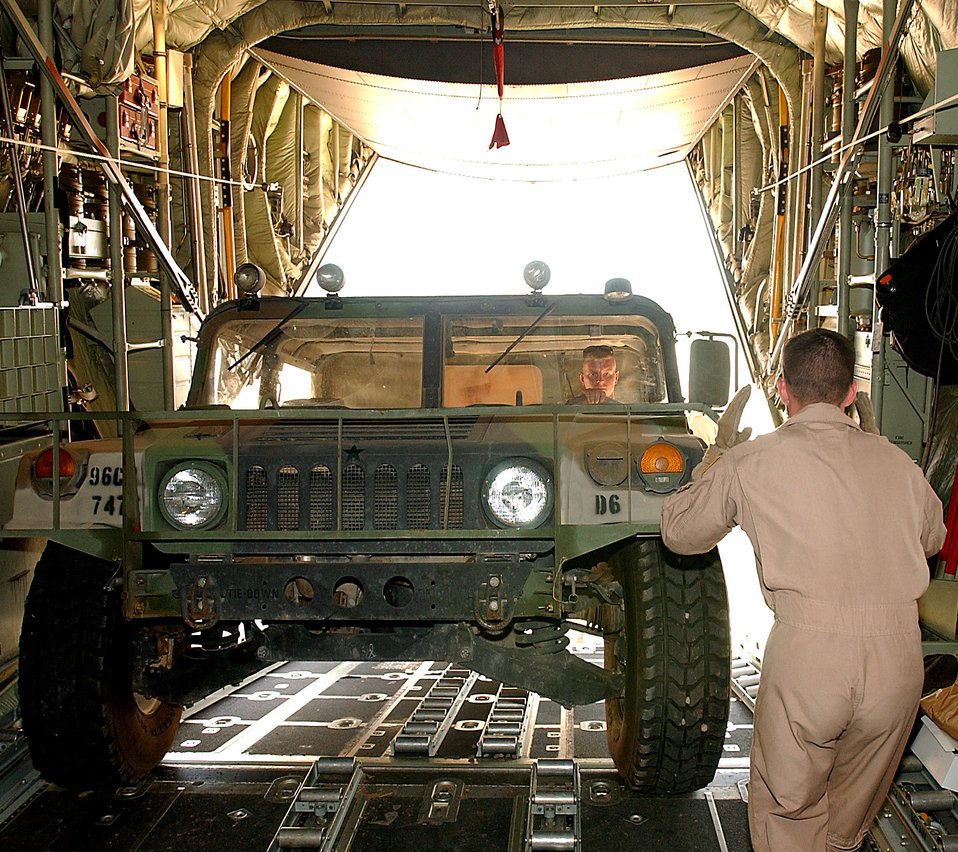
Aircraft support

GODE, Ethiopia (AFPN) -- Senior Airman Ryne Regan guides the driver of a humvee off a C-130 Hercules. Aid brought by C-130 Hercules is helping Army engineers to accomplish their mission, which included digging wells. Airman Regan is with the 913th Airlift Wing, Willow Grove Air Reserve Station, Pa.